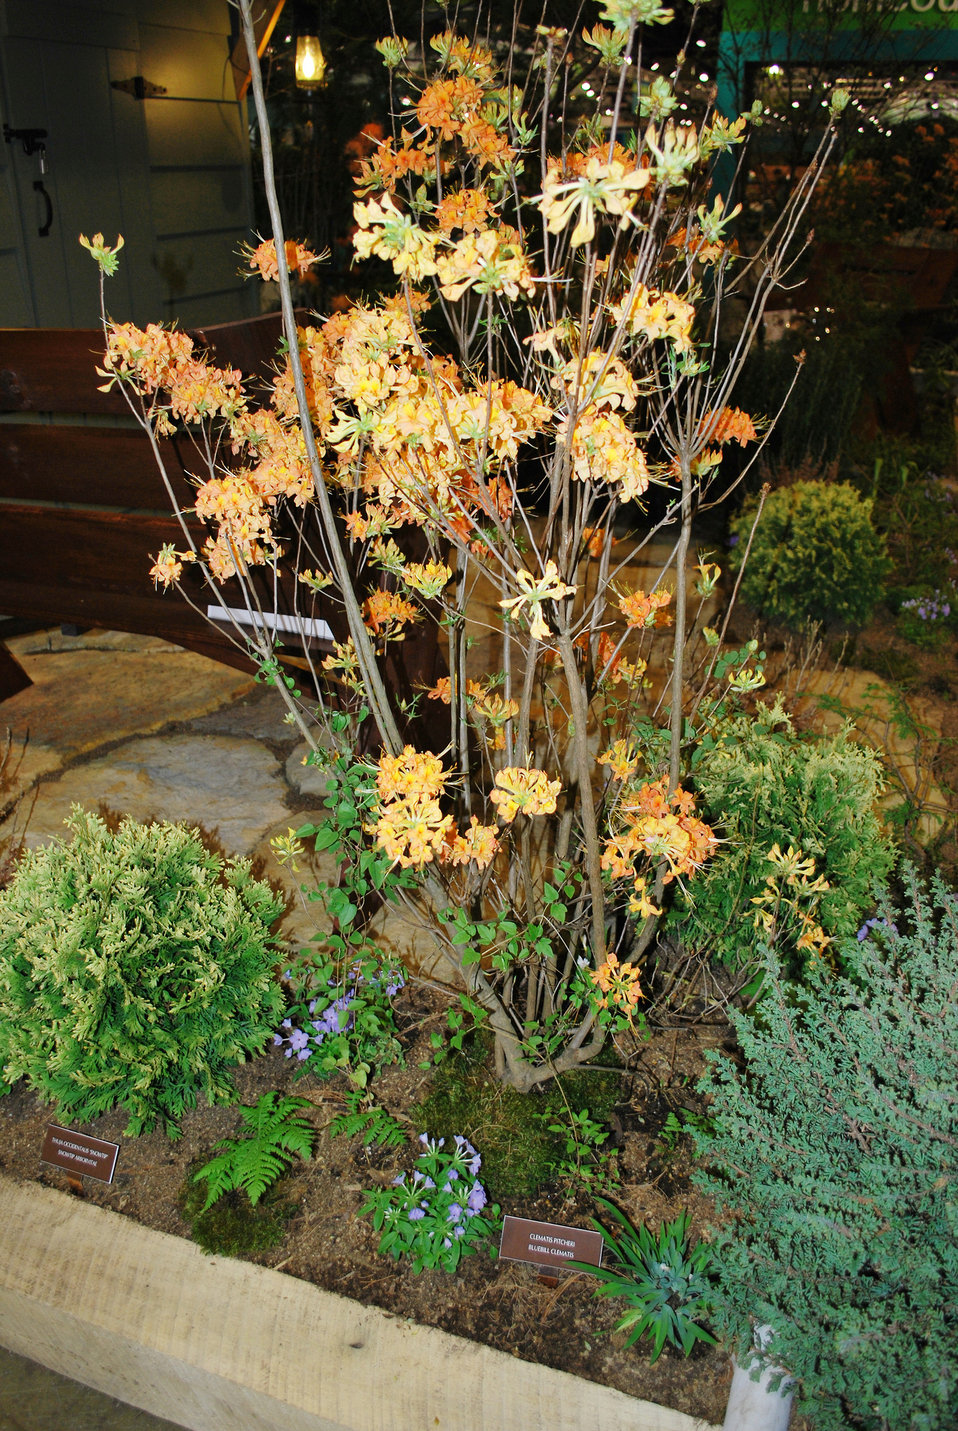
March 4, 2013 - Mid-Atlantic Region, Native Plant: Piedmont Azalea

A beautiful tangerine colored, Piedmont azalea native to the mid-Atlantic region. This plant was part of the EPA exhibit at the 2013 Philadelphia Flower Show which gave visitors ideas as to how they might use native plants in their own landscapes.

More EPA resources, species photos, and information about the 2013 Flower Show

Find the right plants for you and your garden